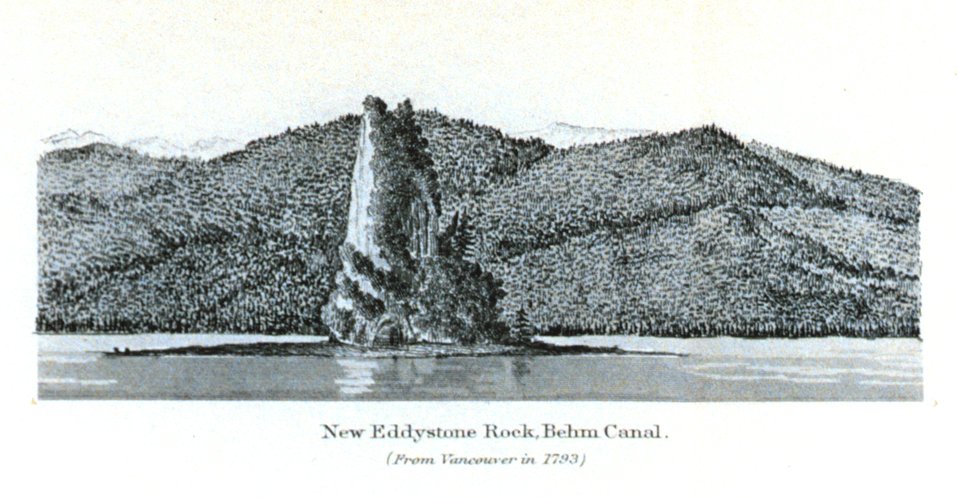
New Eddystone Rock, Behm Canal. In: Pacific Coast Pilot Alaska Part I 1883. P. 50. Library call number VK943 .N3 1883.